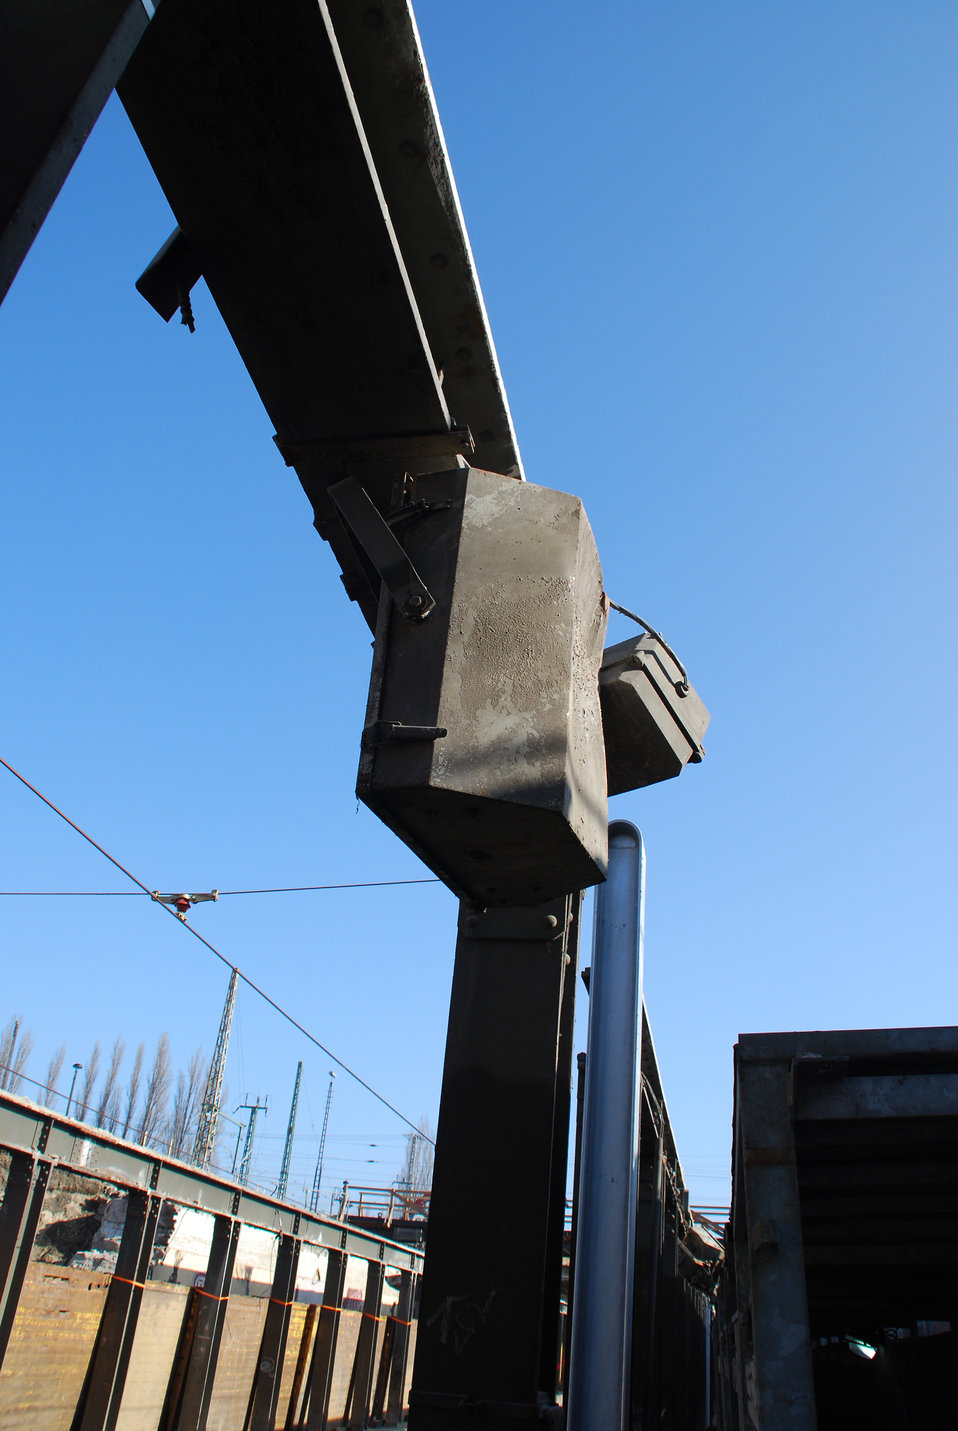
Abriss Bahnhofstunnel Frankfurt (Oder)